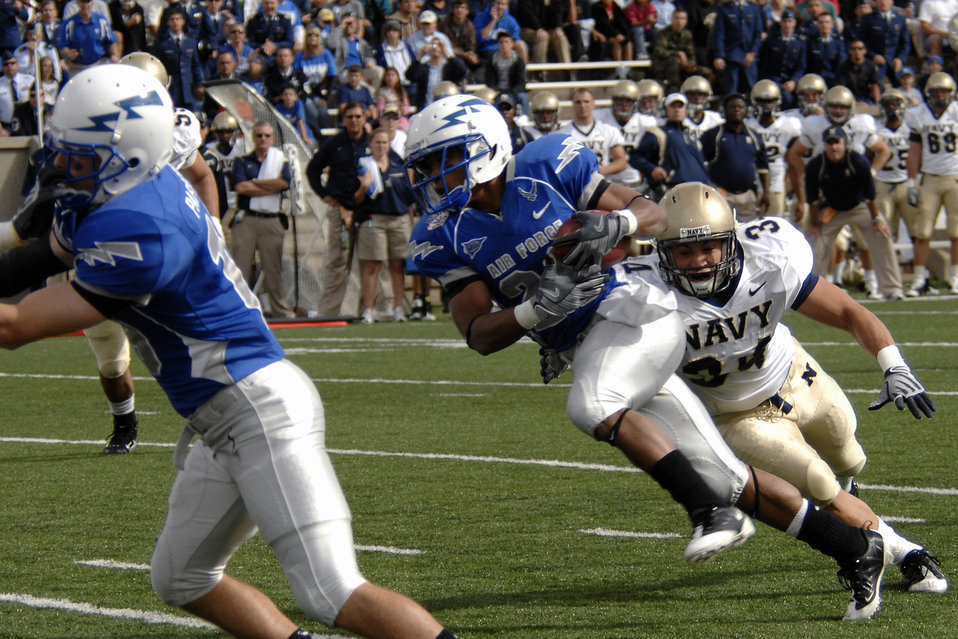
Football: Navy holds off Falcons

U.S. Air Force Academy sophomore running back Kyle Lumpkin eludes a tackle as Navy defeated Air Force 33-27 at the Academy in Colorado Oct. 4.